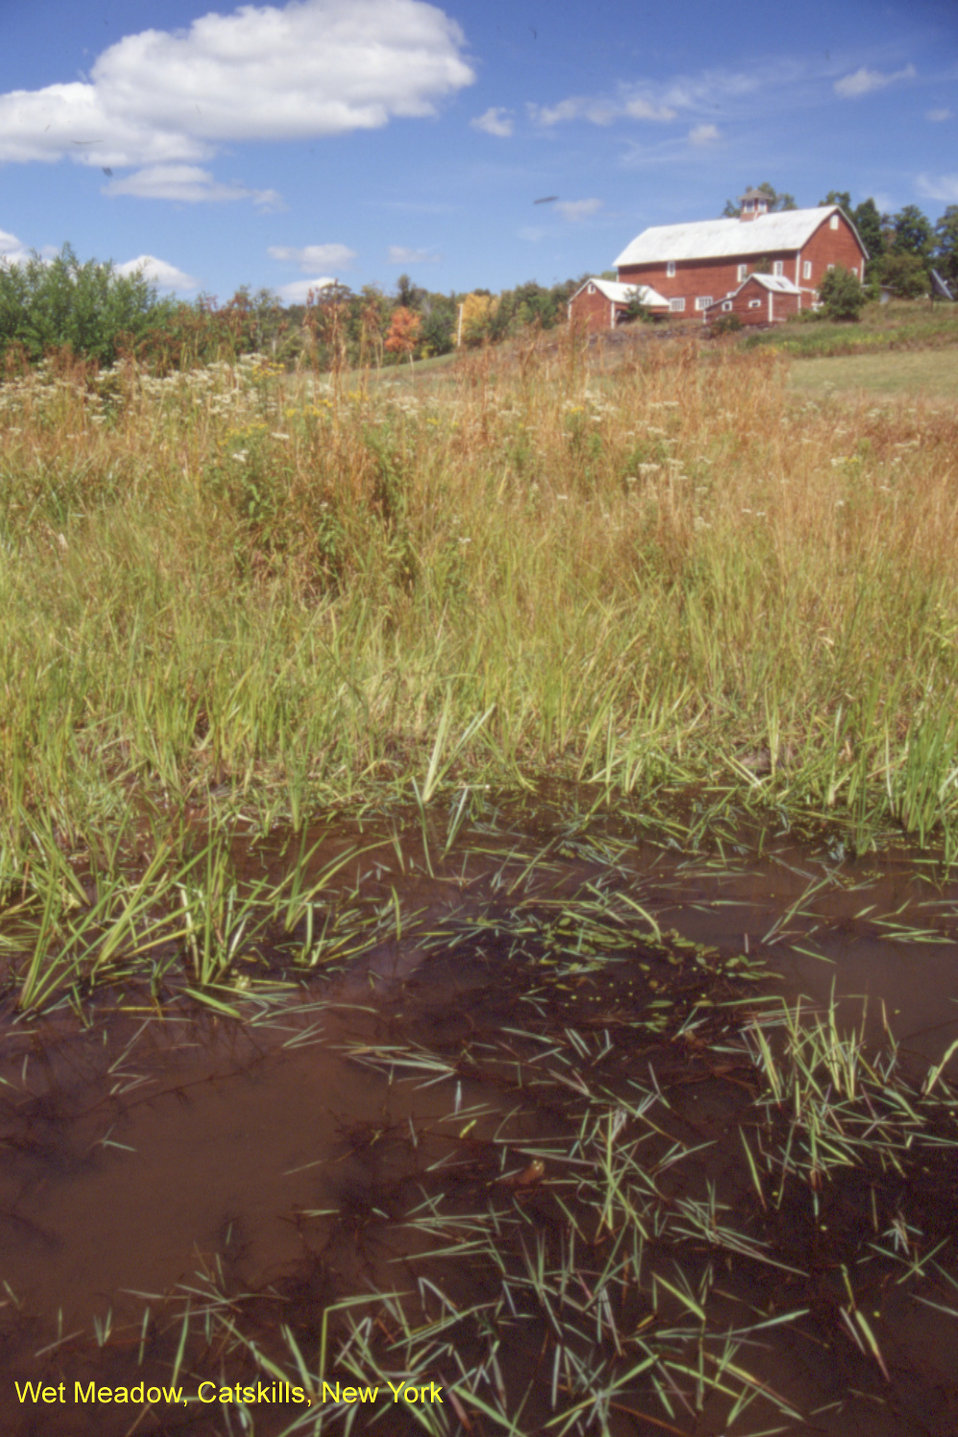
Wet Meadow, Catskills, New York